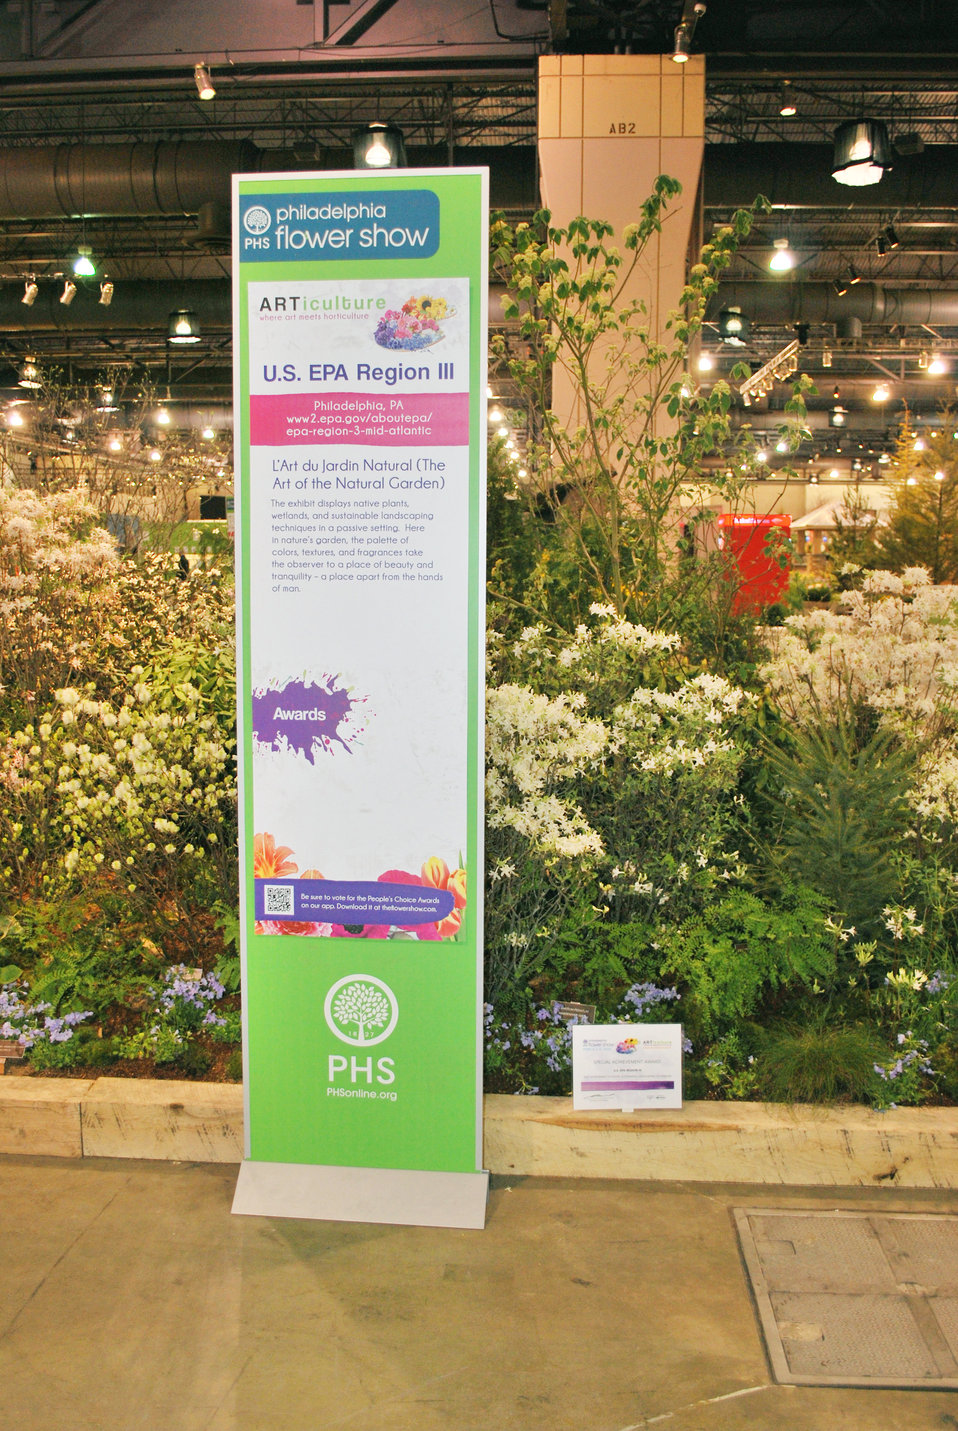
EPA's display at the Philadelphia Flower Show, 2014

A view of our exhibit – a garden of native plants - at the 2014 Philadelphia Flower Show.